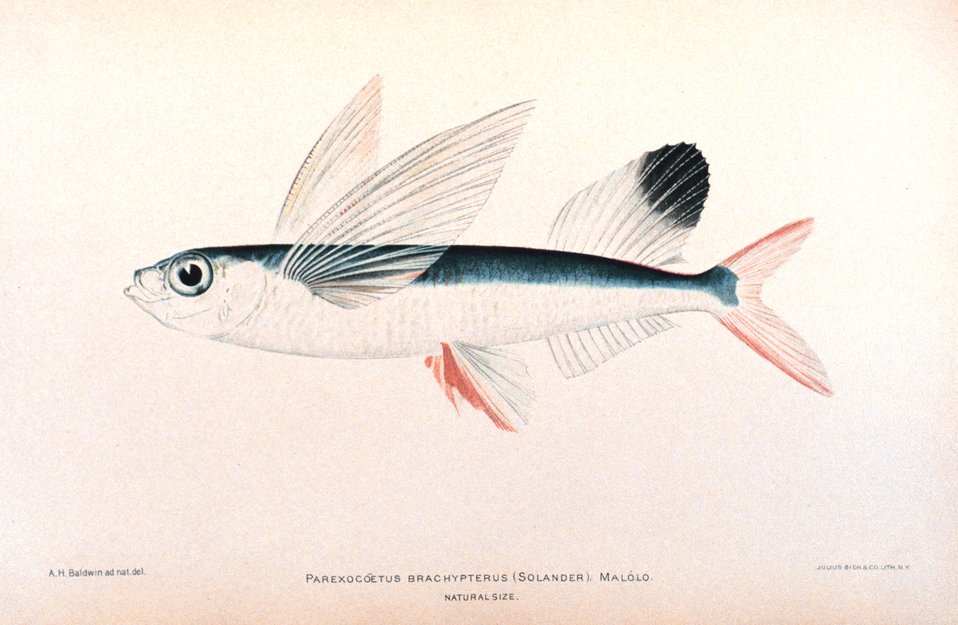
Parexocoetus brachypterus (Solander). Malolo. In: 'The Shore Fishes of the Hawaiian Islands, with a General Account of the Fish Fauna', by David Starr Jordan and Barton Warren Evermann. Bulletin of the United States Fish Commission, Vol. XXIII, for 1903. Part I. P. 574, Plate III.